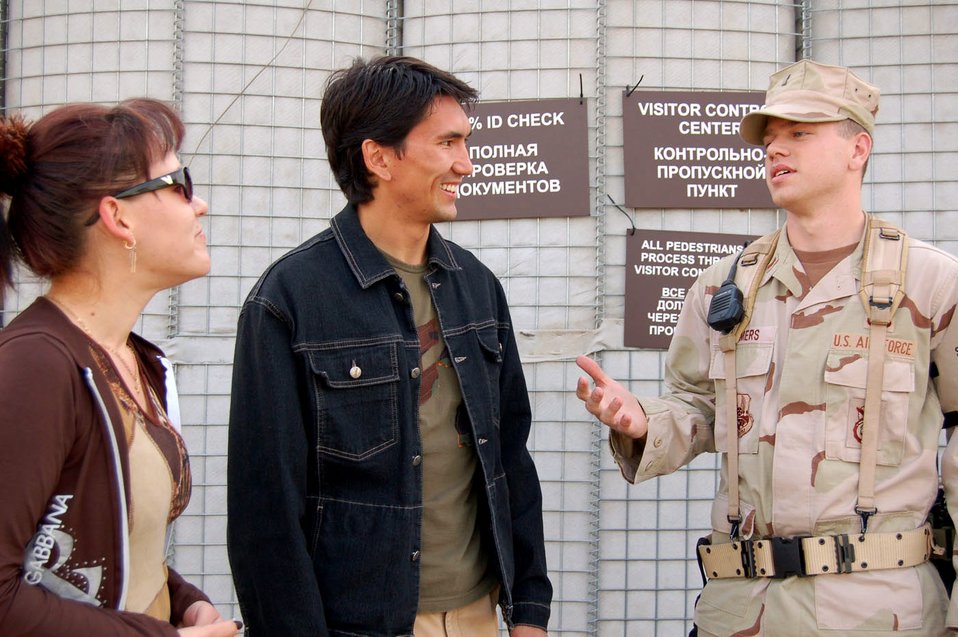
Security forces demonstrate skills

Second Lt. Kevin Summers speaks to Kyrgyz translators at Manas Air Base, Kyrgyzstan, on Wednesday, April 19, 2006. He is the 376th Expeditionary Security Forces Squadron flight commander.